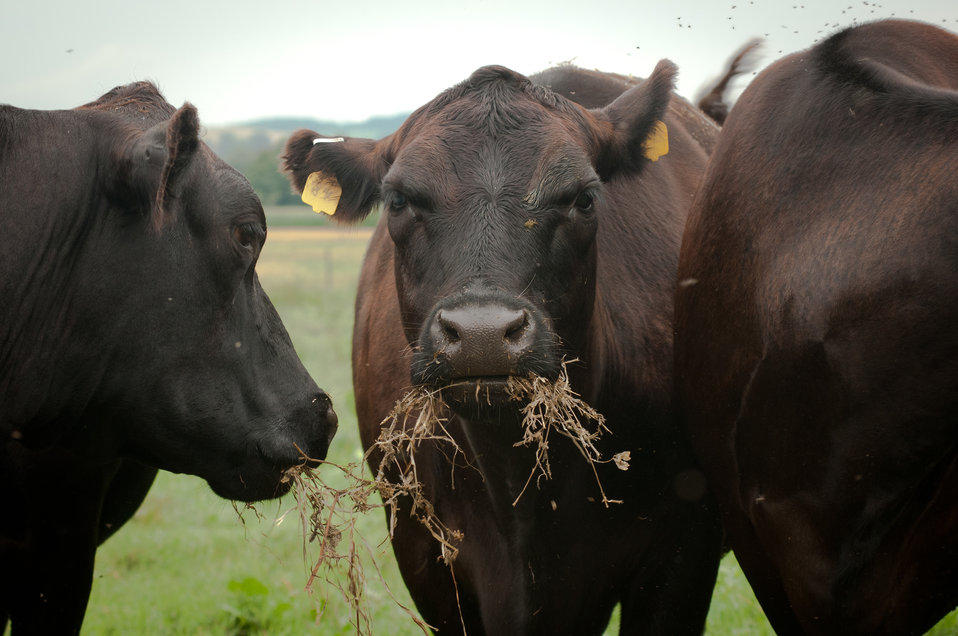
Black Angus cows and calves graze organic pastures, and for added nutrition and variety, they enjoy a daily feeding of sweet silage at Nick’s Organic Farm, owned by Nick Maravell, in Adamstown, MD on Friday, July 12, 2013. The white plastic wrapped bales of pasture grass and alfalfa have been fermenting for months to create sweet silage that stores well and can be used to feed cattle at varying amount all year long. The fermentation process sweetens the taste and increases the vitamin levels. The farm produces Black Angus beef, chicken, turkey, eggs, hay, soybeans, corn, alfalfa, orchard grass, rye; and other crops. The cattle are 100% grass-fed receiving certified organic pasture, certified organic hay (in winter), water and mineral salts mixed with sea kelp. The cattle are not fed hormones, antibiotics or animal products. Poultry feed from grain is ground from organic grain. The poultry also graze on organic pastures. The farm has conducted on-farm research with federal, state and non-profit agencies to refine organic practices. An organization such as the U.S. Department of Agriculture (USDA) Agricultural Research Service (ARS) center in Beltsville has been able to conduct research to improve organic crops and to breed and manage the cattle so that they have.